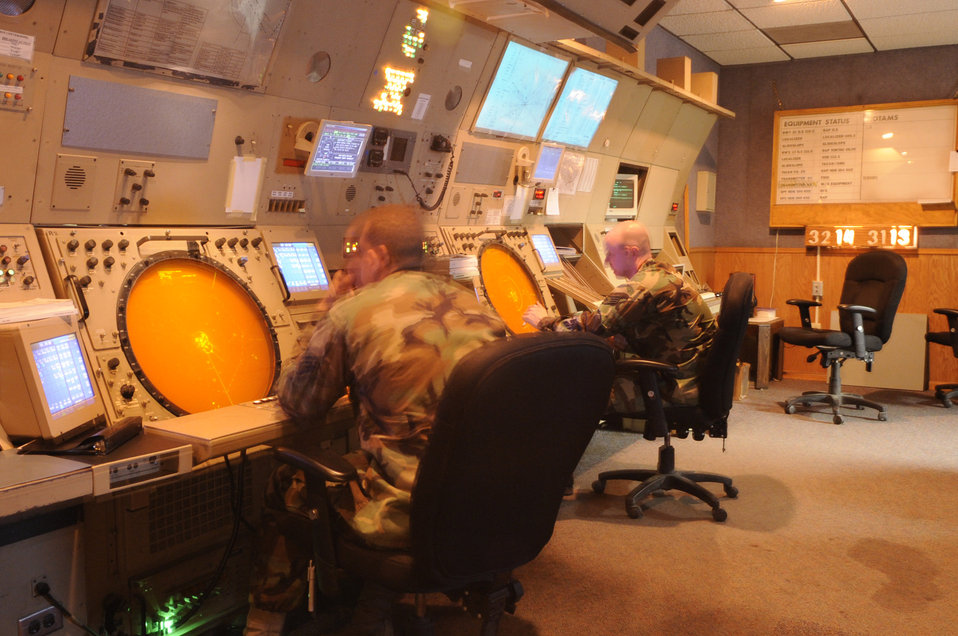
New radar facility to open

Staff Sgt. Jacob Martin (left) and Senior Airman Scott Causey monitor the old Radar Approach Control system June 17 at Ellsworth Air Force Base, S.D. This RAPCON system will be updated with the new Standard Terminal Automation Replacement System June 30, saving the Air Force $28.7 million over the next 20 years. Sergeant Martin and Airman Causey are 28th Operations Support Squadron Air Traffic Control journeymen.